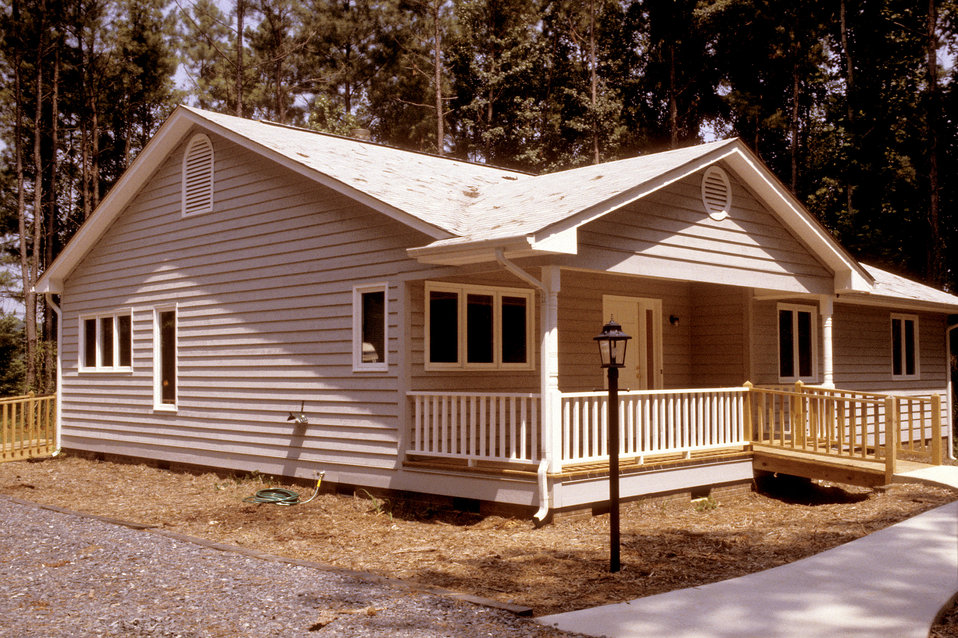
This is one of six images, (PHIL# 9155 - 9160), depicting the exterior of a small, wood frame, clapboard, single story house with a smooth, concrete pathway to the front porch. The porch was roofed, and was level with the first floor of the house. The pathway to the front door crossed a small, railed bridge in order to establish and maintain the proper drainage swale along the front of the house. A retaining wall supported the earth berm upon which the pathway sat. The projection of a small ramp could be seen, on the left, at the rear of the house. The front door has a full-height sidelight window. This type of stepless, universal entrance avoided the construction, slopes, and maintenance issues of ramped entrances, thereby, avoiding the unattractive and stigmatizing appearance of most ramps.